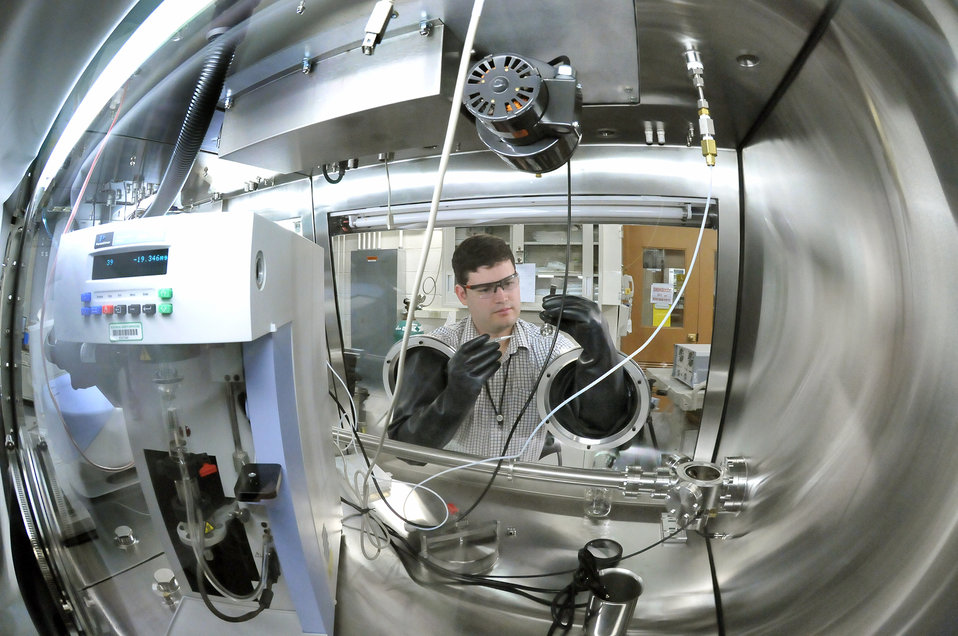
Argonne National Laboratory battery researcher manipulates an air-sensitive sample inside an inert glove box.

The box is filled almost entirely with argon gas so that there is very little water or oxygen inside to react with and degrade the special battery materials. Argonne is one of several research institutions that form an integral part of the Joint Center for Energy Storage Research, a public-private partnership that aims to overcome critical scientific and technical barriers and create new breakthrough energy storage technologies.